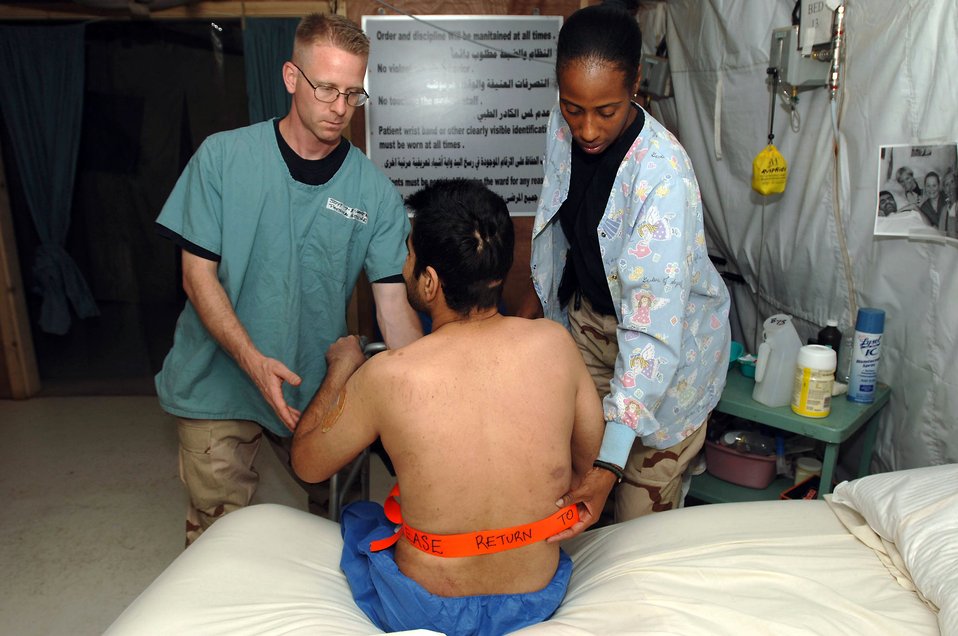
Medics relieve pain at home, in war

BALAD AIR BASE, Iraq -- Staff Sgt. Johnathan Gamer (left) and Tech. Sgt. Bianca Pulley help an Iraqi patient into bed after a therapy session at the Air Force Theater Hospital here Aug. 25. The patient's leg was amputated from injuries received by an improvised explosive device. The Airmen are physical medicine technicians with the 332nd Expeditionary Medical Group's physical and occupational therapy clinic.